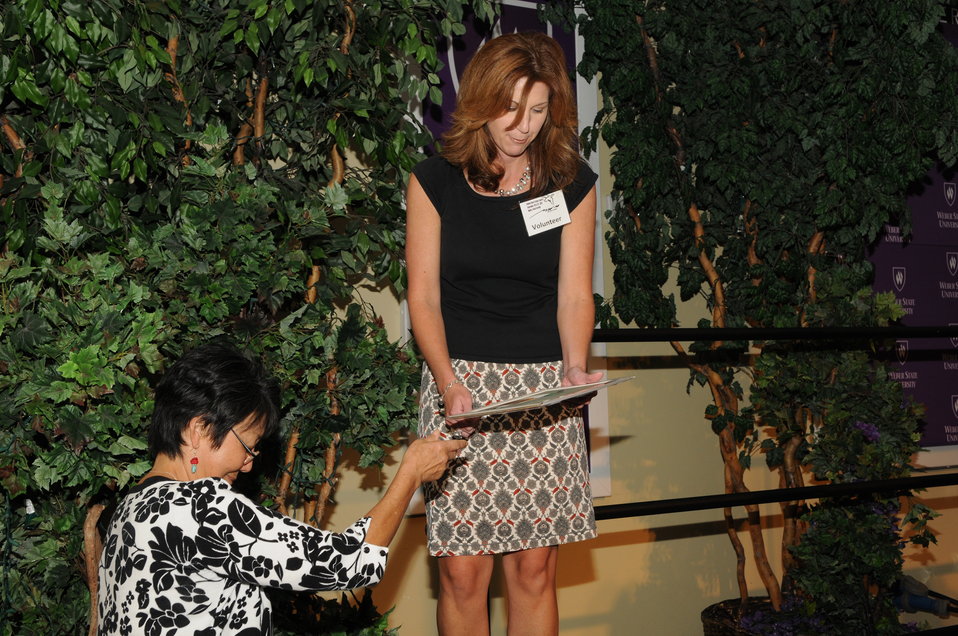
Artwork Presenter

The U.S. Fish & Wildlife Service sponsored the 2012 Federal Duck Stamp Art Contest September 28 and 29 in Ogden, Utah, at Weber State University. A panel of five judges was responsible for choosing the art work used to design the 2013-2014 Migratory Bird Hunting and Conservation Stamp.